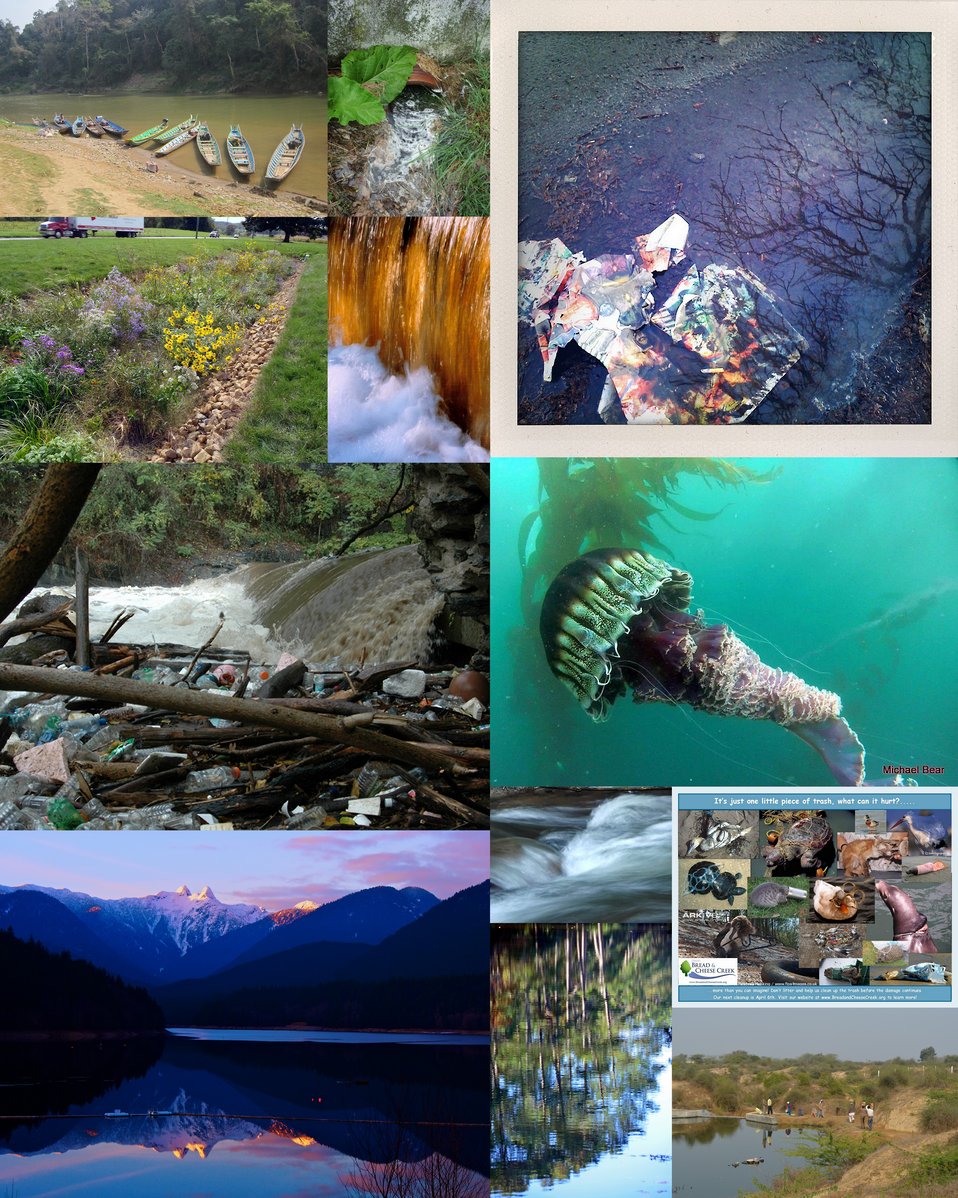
World Water Day - March 22, 2013

World Water Day is an International Event held annually on 22 March, where officials and citizens around the world join together to advocate for more sustainable management of this precious resource. The 2013 theme is cooperation. We are all connected to water, we are all connected to each other through this life-supporting resource.

To celebrate and inspire others around this day, we're asking you to share photos of water near you and actions you might be taking to protect it at www.flickr.com/groups/ourenvironment

EPA water updates and news water.epa.gov/

In 2013, in reflection of the International Year of Water Cooperation, World Water Day is also dedicated to the theme of cooperation around water and is coordinated by UNESCO in collaboration with UNECE and UNDESA on behalf of UN-Water.

An international day to celebrate freshwater was recommended at the 1992 United Nations Conference on Environment and Development (UNCED). The United Nations General Assembly responded by designating 22 March 1993 as the first World Water Day. www.unwater.org

These photos above have been provided to EPA's State of the Environment global photography documentary. Photo Credits:
'Boats on the Mekong, Laos' by SoBoME, March 1, 2013

'The problem with stormwwater' by JEBlankenship May 29, 2012

'Trash Puddles Oslo, 2011' by Michelle Lanning, April 28, 2011

'Redfining Industrial Stormwater' by JEBlankenship, September 21, 2012

'Golden Water' by donsfotostop Michigan, May 11, 2011

'Plastic, plastic, everywhere--and dirty water to drink...' by bltlewis January 13, 2012'

'black sea nettle (Chrysaora achlyos)' by scubapro25, March 14, 2013

'Downstream' by photocafe, British Columbia, January 13, 2013

'Water in Motion' by Rustgibson, August 6, 2012

'One small piece of litter can make a difference' by Clean Bread and Cheese Creek, March 13, 2013

'Trees are reflected in a Hilton Head Island lagoon on a December morning.' by John Dreyer, December 28, 2011

'Building Wetlands' Yamuna River, India by getscooter